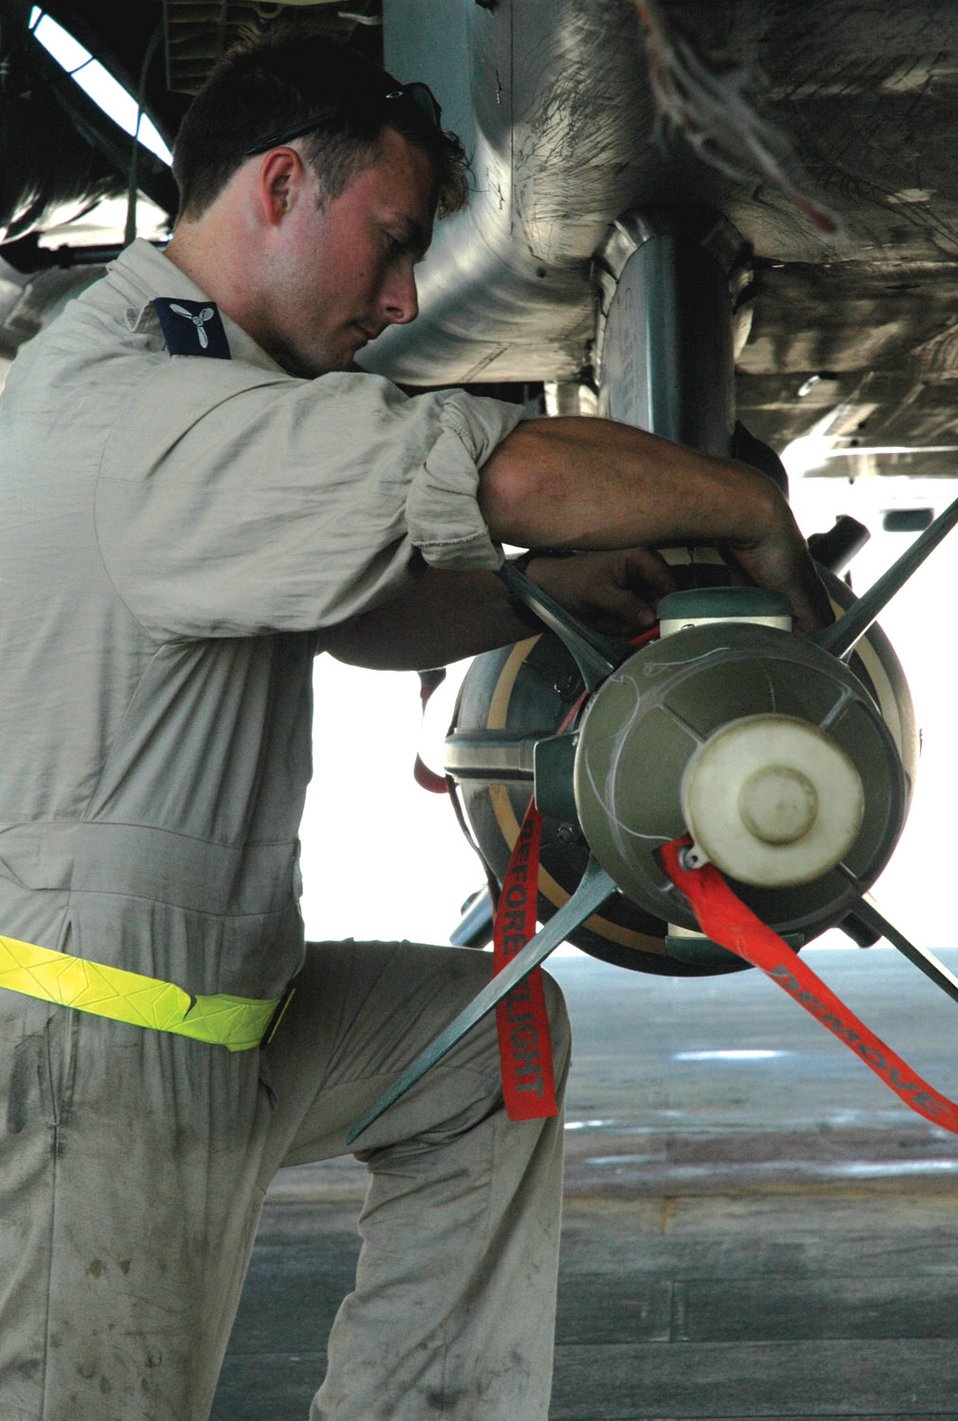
British Royal Air Force

SOUTHWEST ASIA (AFPN) -- Senior Aircraft Man Jaime Curtis ensures a weapons system on a Tornado GR4 is safe. There are more than 250 RAF members here who work with the U.S. Air Force. Senior Aircraft Man Curtis is a British Royal Air Force weapons technician.